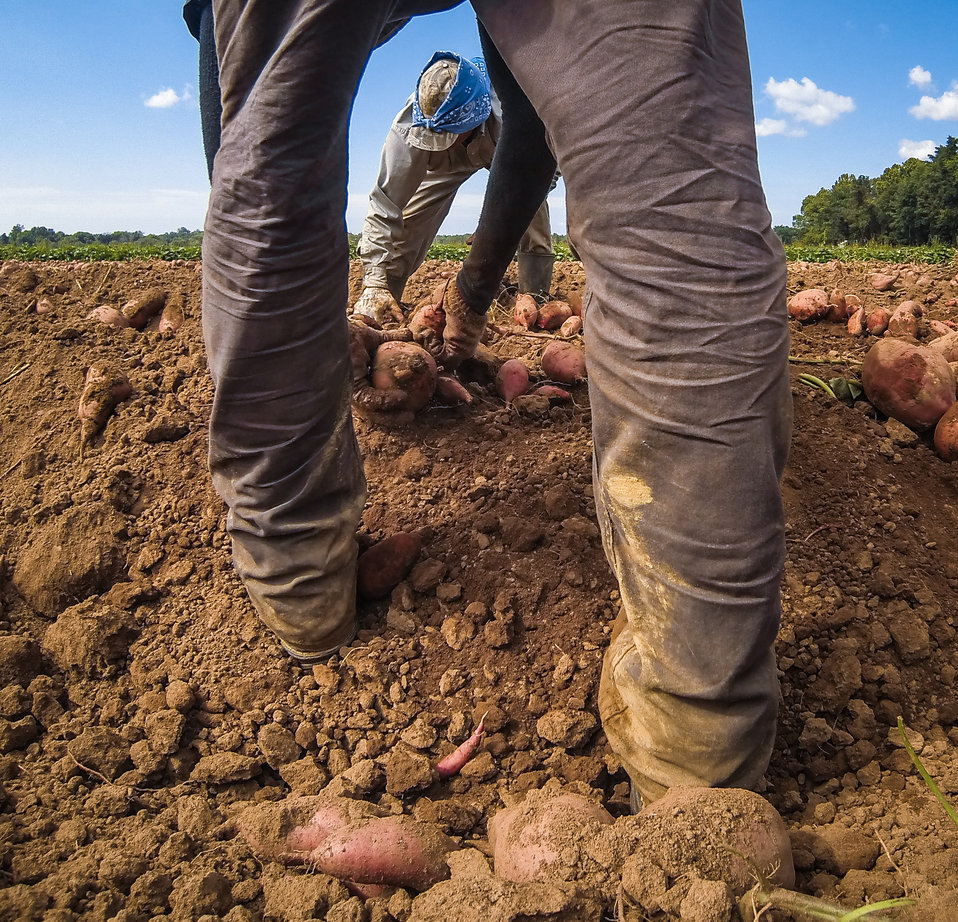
Migrant workers pick, separate, and process sweet potatoes at Kirby Farms in Mechanicsville, VA on Friday, Sept. 20, 2013. 200 acres of the farm are devoted to eggplant, spinach, beets, tomato, jalapeno peppers, melons and a variety of greens. Soybeans and small grain are grown on the remaining 300 acres. Using rotational crop practices allows Kirby Farms to double and triple crop yields. Wholesalers, who buy from this farm, sell the produce to major supermarkets in the Mid-Atlantic region, from North Carolina to Maryland. Restaurants in the local area prepare and serve the local bought produce to patrons in the Richmond, VA metropolitan area.